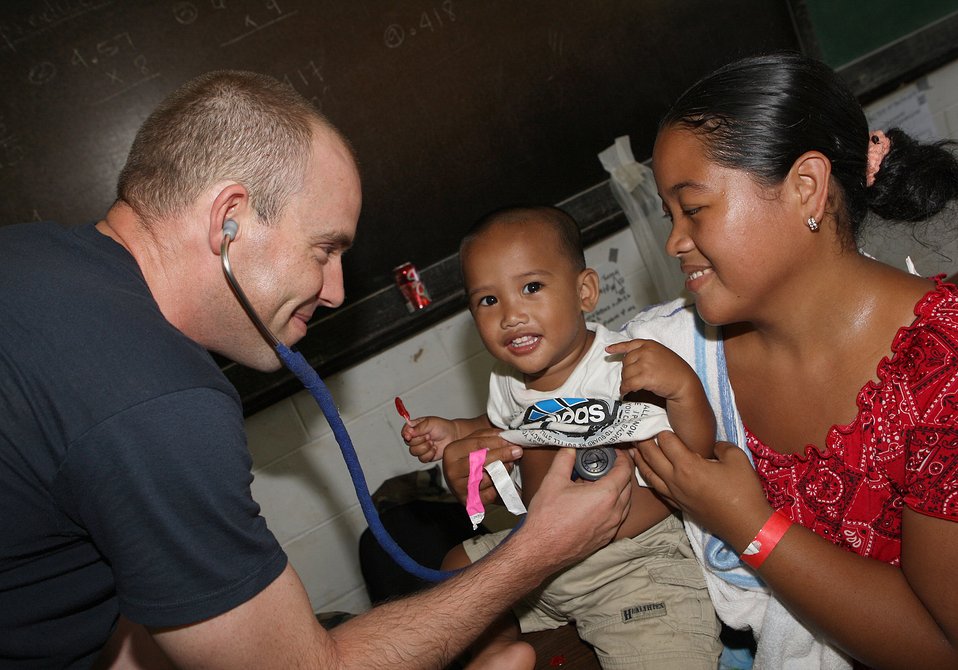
U.S. Navy Doctor Lt. Hammer Listens to a Baby's Lungs

U.S. Navy Doctor Lieutenant Noah Hammer listens to a baby's lungs at a Medical Civil Action program at Lukop Elementry School in Micronesia during Pacific Partnership on July 12, 2011.